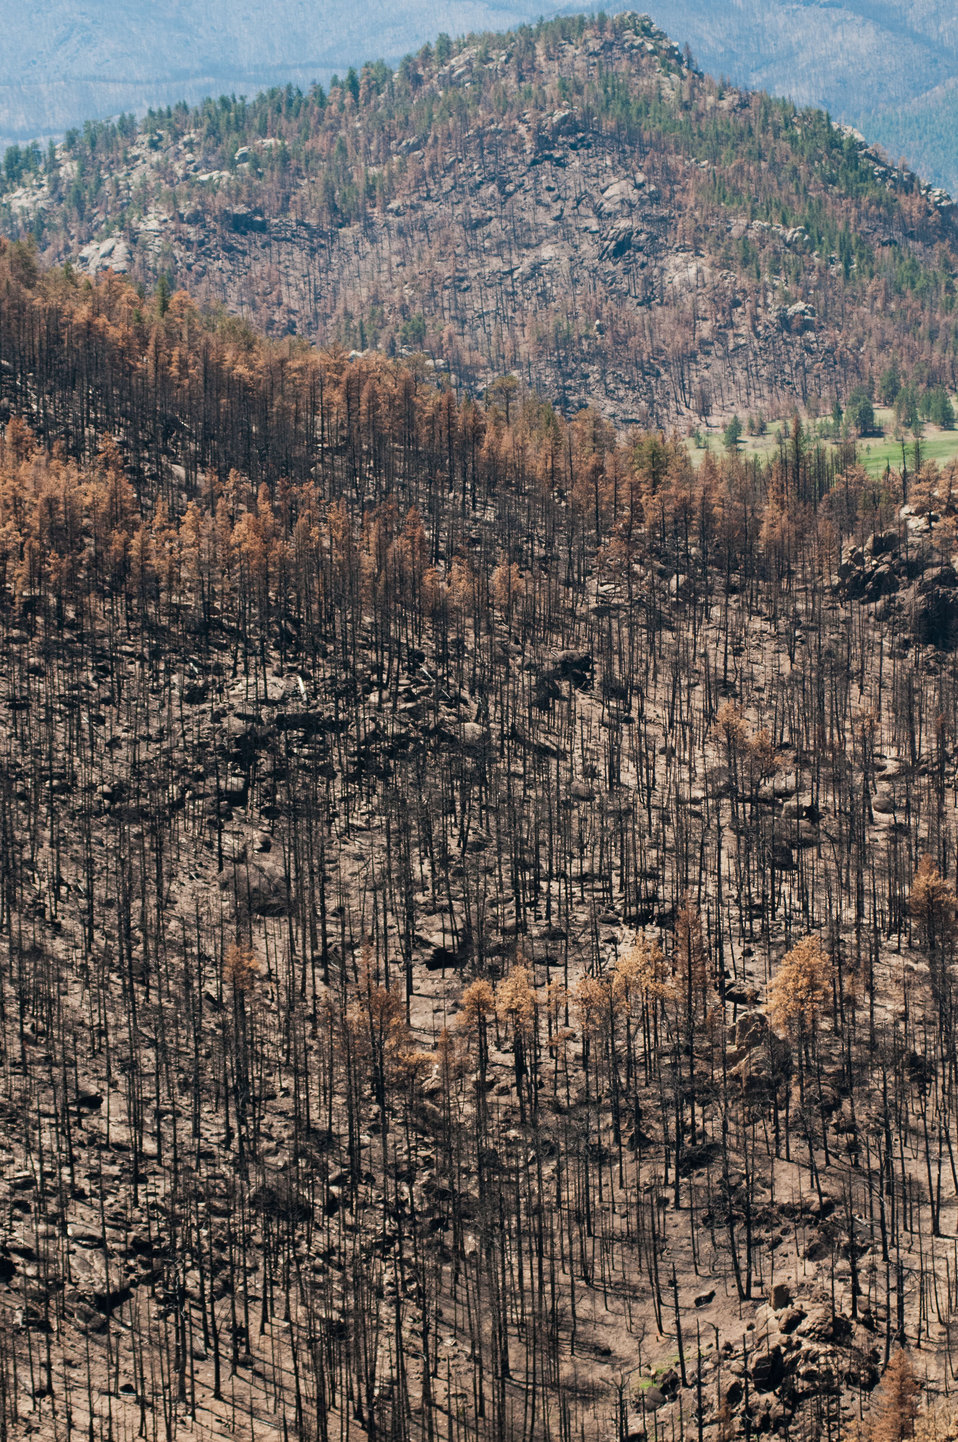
The aerial application of yellow straw continues to mitigate soil and ash runoff from the mountainous terrain leading to Seaman Reservoir, drinking water resource for the City of Greeley, on Friday, July 20, 2012, near Fort Collins, Colo. Red areas are burnt trees with pine needles that will fall tho the ground and form a mulch. Green areas are the remaining healthy trees that provide shade and protection to promote the growth of ground cover plants and shrub. An elk can be seen foraging on a remote patch of unburnt ground cover. Because of steep terrain, helicopters must be used to quickly deliver 1,800 tons of straw to Forest Service lands, and private and other lands that receive a seed mix and straw to promote ground cover plant growth on ash-covered lands. In total, 1,800 tons of straw will be applied during the 14-day operation. One quarter of the cost was paid by the City of Greeley and the U.S. Department of Agriculture funded the remainder. The Hewlett Gulch Fire was started by a camper’s alcohol stove, on May 14, at the saddle of a picturesque mountain ridge along the Hewlett Gulch Trail of Poudre Canyon, in the Roosevelt National Forest, 60 miles north of Denver. At it’s peak, more than 400 firefighters were battling fires being pushed by 50 mph winds that helped blacken over 12-square-miles of dry ground cover, brush and trees. Many of the trees were already dead and tinder dry from beetle-kill. The water in the reservoir remains clean and clear, while downstream water flow has gone from famous Colorado clear water to nearly black flows of water heavily laden with ash, silt, and burnt debris that recent thunderstorms have already washed down from the mountainsides.